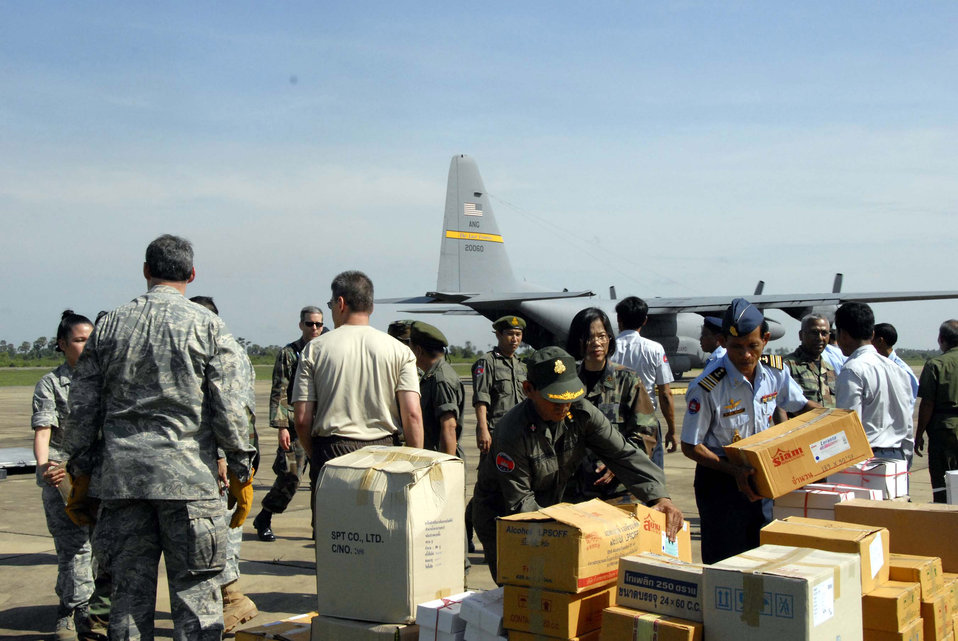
Cambodian relief

American servicemembers and Royal Cambodian armed forces members move supplies May 24 at Chhnang Province, Cambodia. Multinational medical teams distributed the supplies to forward-operating locations for Operation Pacific Angel. The operation is a joint/combined humanitarian assistance operation in support of capacity-building efforts. Participating services include the active duty, Reserve and National Guard components of the Air Force, Army, Royal Thai air force, and Royal Cambodian armed forces.